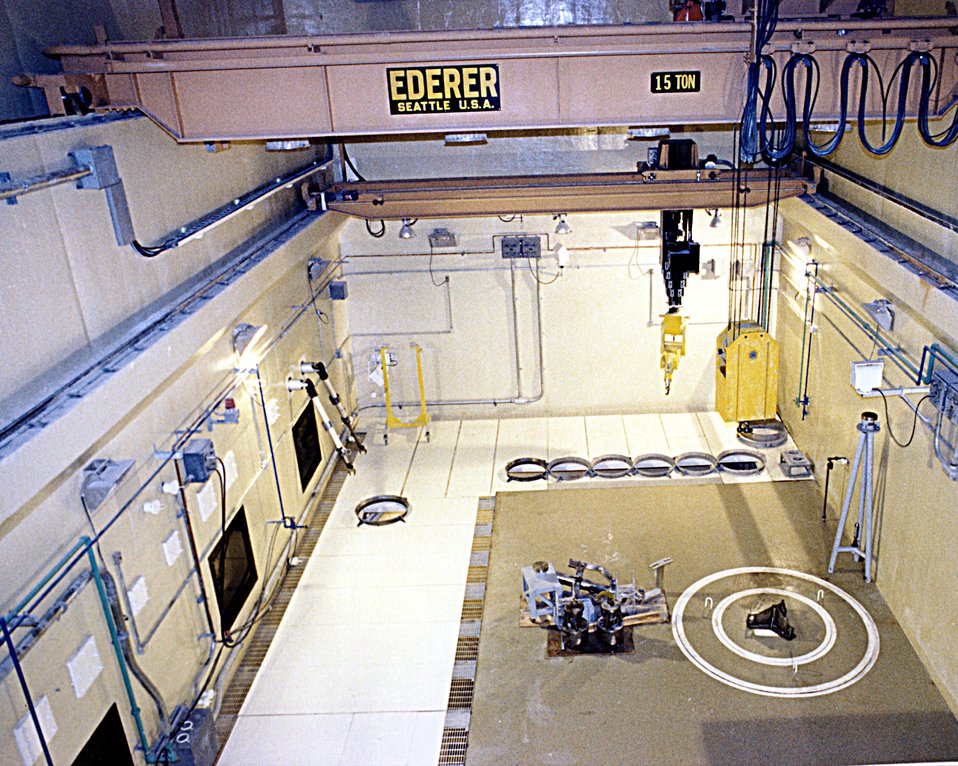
WASTE HANDLING BUILDING HOT CELL.

THE WASTE ISOLATION PILOT PLANT IS A DOE RESEARCH AND DEVELOPMENT FACILITY FOR DEMONSTRATING THE SAFE DISPOSAL OF TRANSURANIC RADIOACTIVE WASTES. TEST SHAFTS HAVE BEEN DRILLED TO A DEPTH OF 2,100 FEET. THE SHAFTS, ONE 6 FEET IN DIAMETER AND THE OTHER 12 FEET IN DIAMETER, PROVIDE AN ENTRY PASSAGE AND VENTILATION TO THE UNDERGROUND SALT ROCK FORMATION THAT IS BEING TESTED TO DETERMINE ITS SUITABILITY FOR RADIOACTIVE WASTE STORAGE.